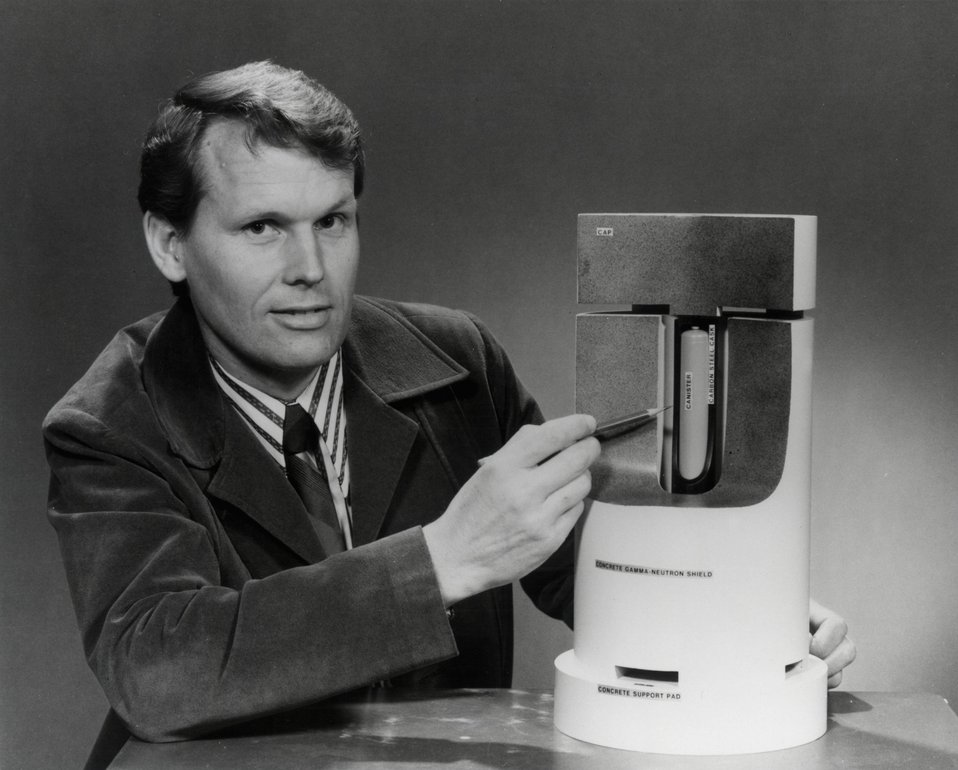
An interim storage facility for high level wastes generated by commercial nuclear power reactors until the year 2000 is being studied and designed by the Atlantic Richfield Hanford Company for the Energy Research and Development Administration. Circa 1975.